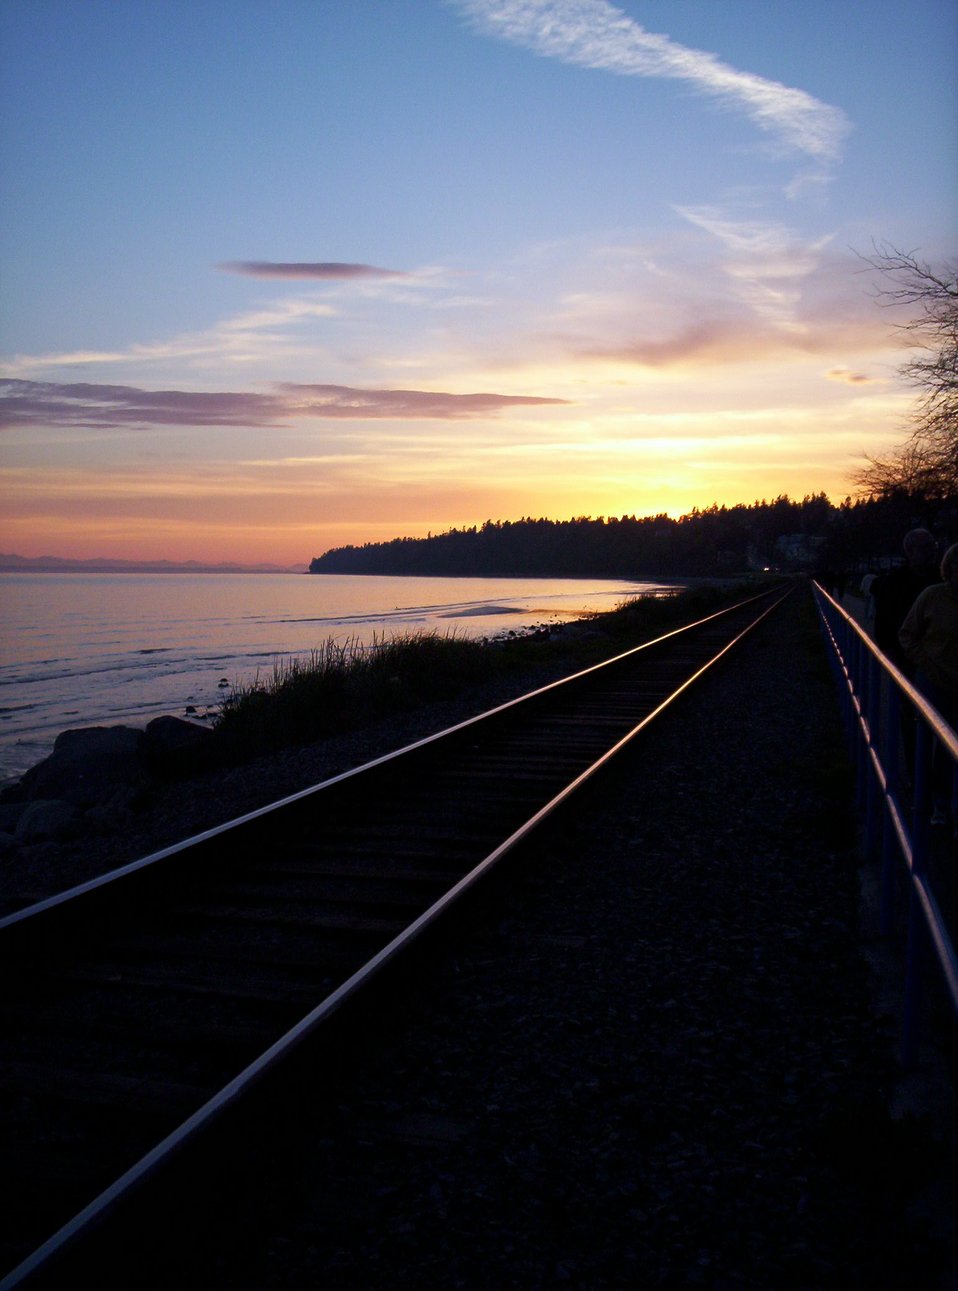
S. Janson. White Rock Beach, Facing West. 2006